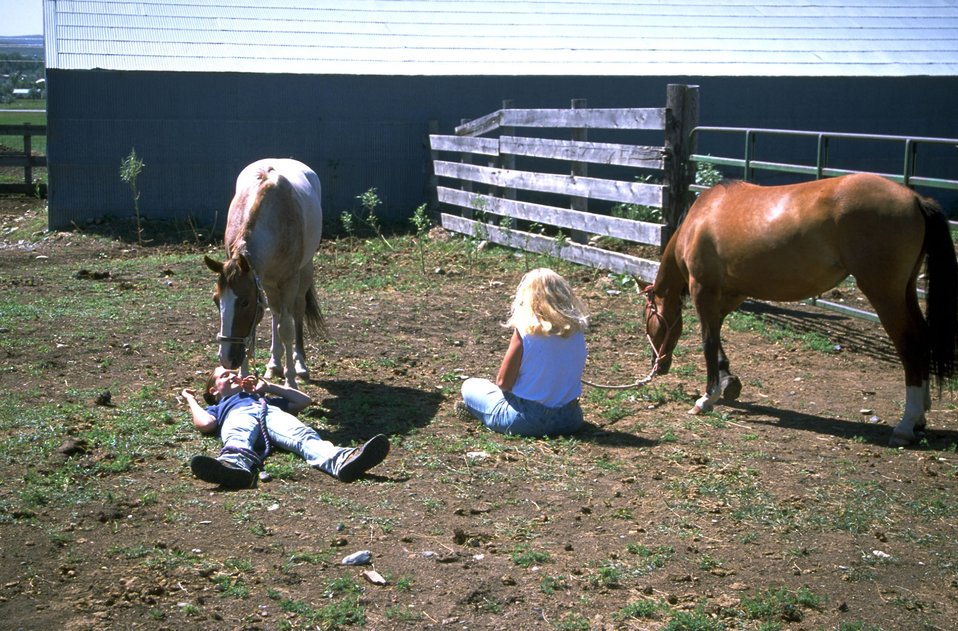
Adopted Horses learning trust